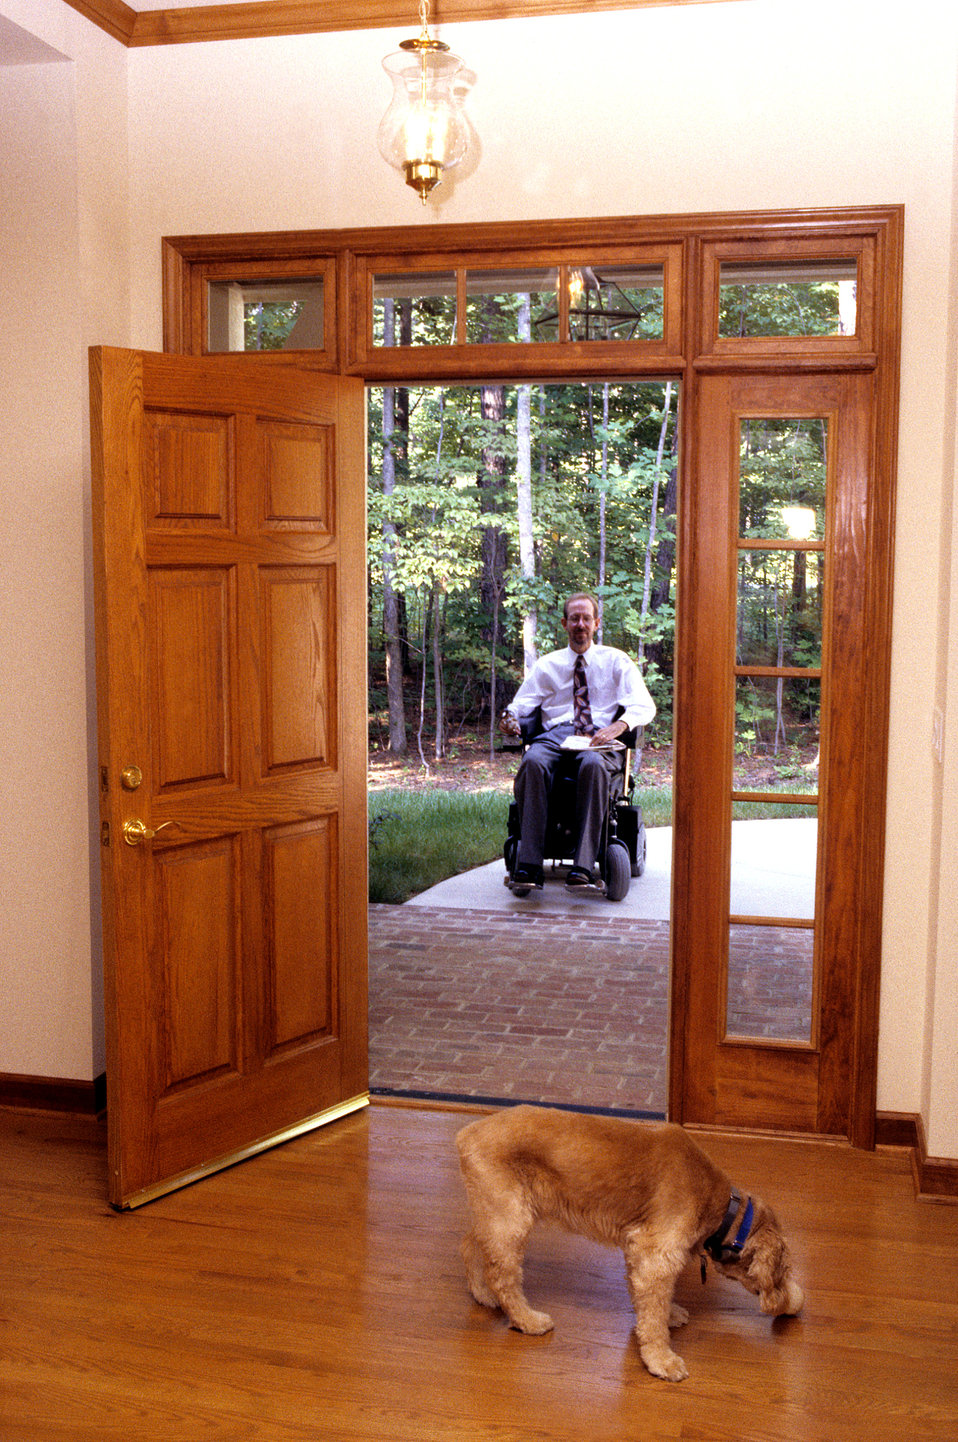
This 1996 image depicted a man seated in his motorized wheelchair just outside his home, and was about to pass inside through his opened front door, while his dog was awaiting his arrival. Note that the smooth concrete pathway, which connected the front porch with the driveway, was flat, and level with the smooth, brick-surfaced porch, and that there was only a very slight elevation at the front door threshold. Also worth noting, was the presence of a floor-to-ceiling sidelight window adjacent to the door jam, the levered door handle, and a roof covering the front porch area, which is suggested in order to facilitate entrance to all, but especially, to the mobility-challenged.